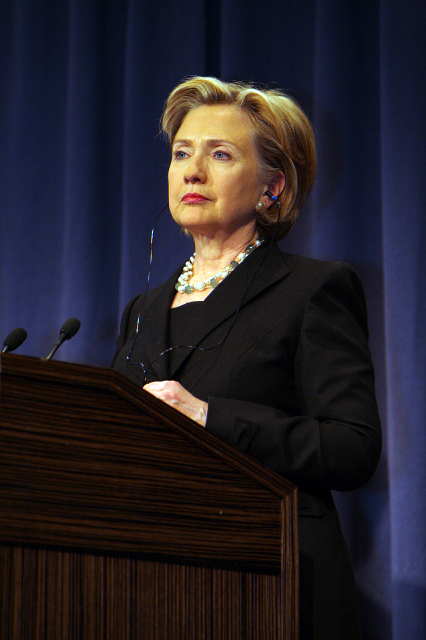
Press Conference With Russian Foreign Minister

Press conference after dinner meeting between U.S. Secretary of State Hillary Rodham Clinton and Russian Foreign Minister Sergey Lavrov in Geneva, Switzerland March 6, 2009.